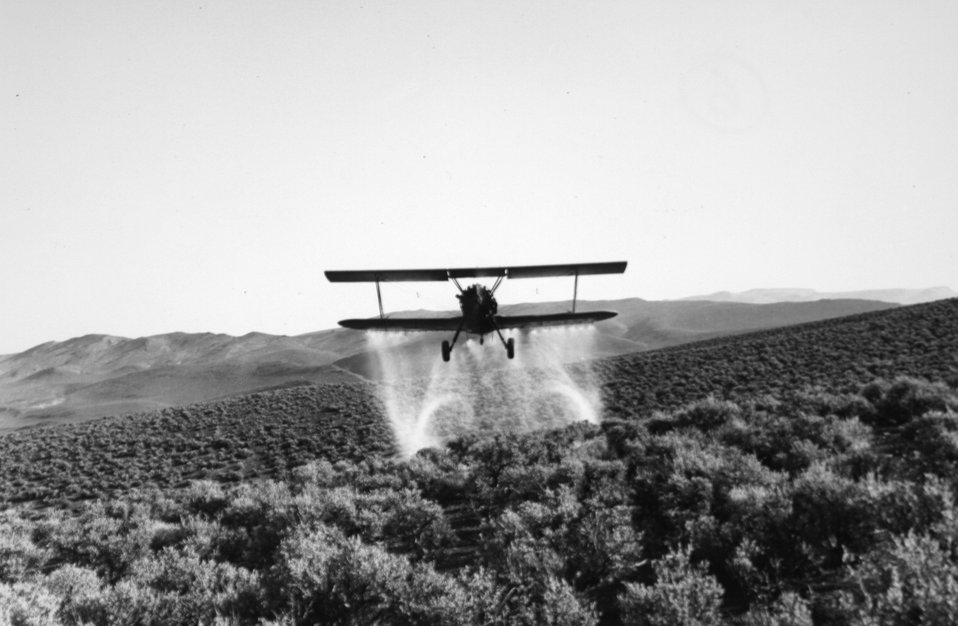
Brush spraying at Rincon circa 1960s